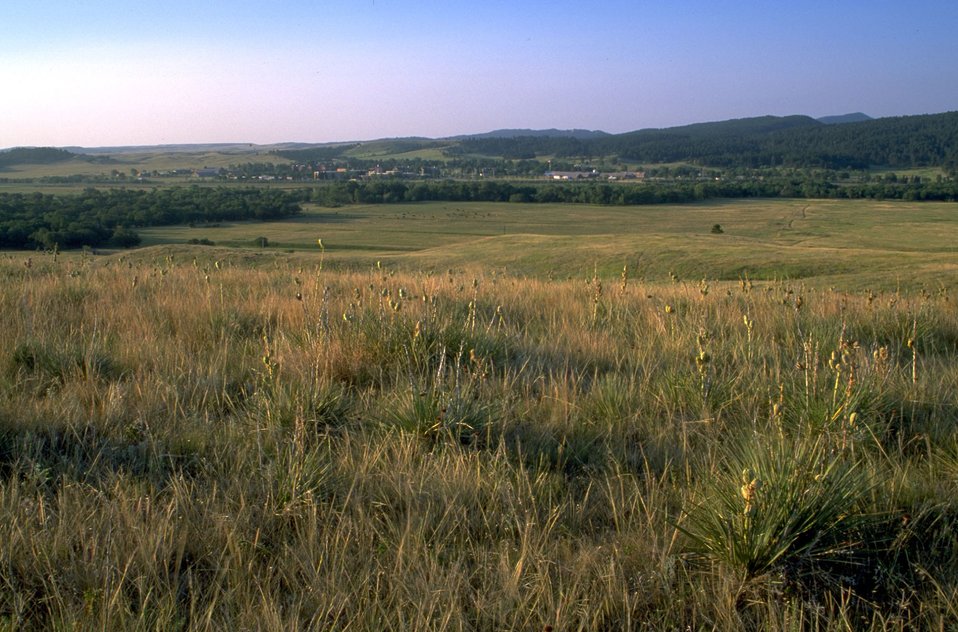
Bear Butte Creek and Veterans Admnistration Complex at Fort Meade